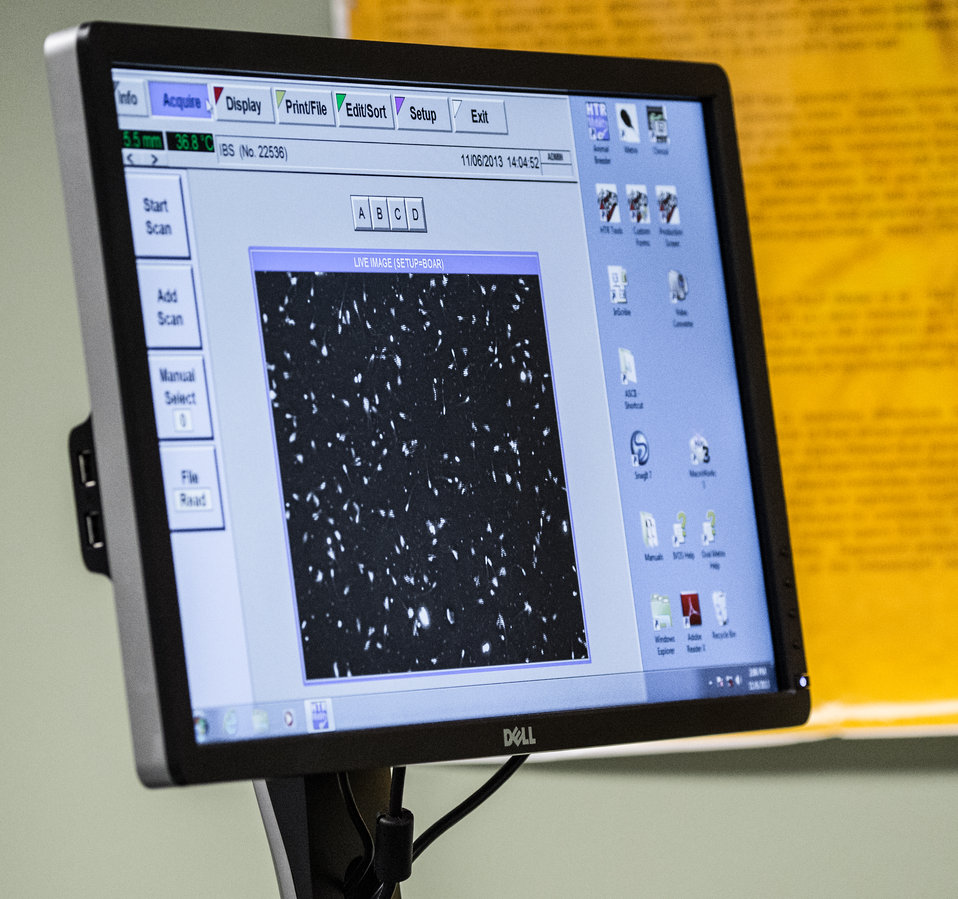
Live Boar sperm appears on the screen as it is being scanned by an electronic microscope to evaluate their mortality, at the U.S. Department of Agriculture (USDA), Agriculture Research Service (ARS), National Center for Genetic Resources Preservation (NCGRP), in Ft. Collins, CO, on Wednesday, Nov. 6, 2013.